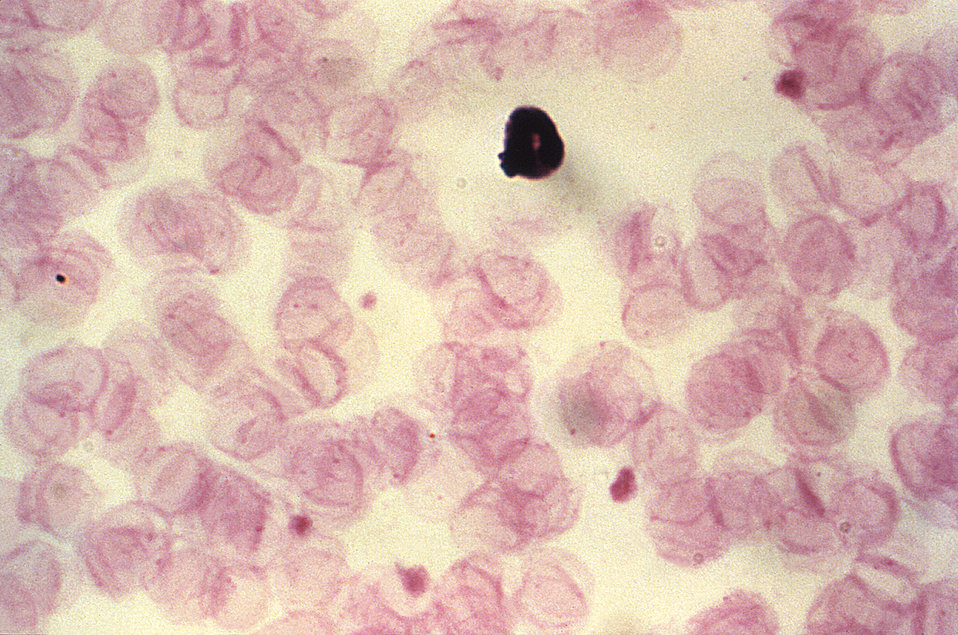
The remnant cell membranes of the RBCs in this thick film micrograph are known as 'ghosts', and surround a single WBC.